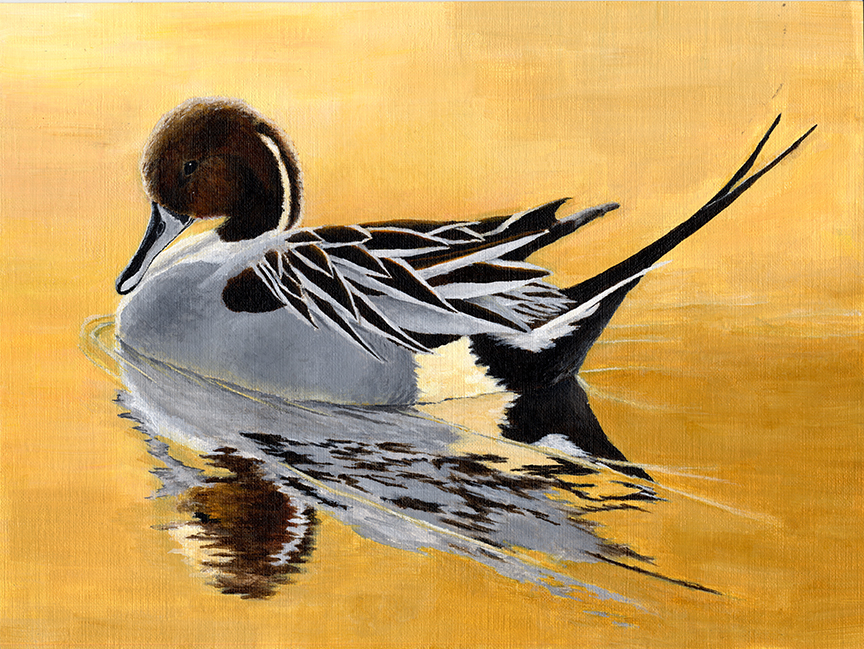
JRDuck2013MA

2013 Junior Duck Stamp Best of Show-Massachusetts